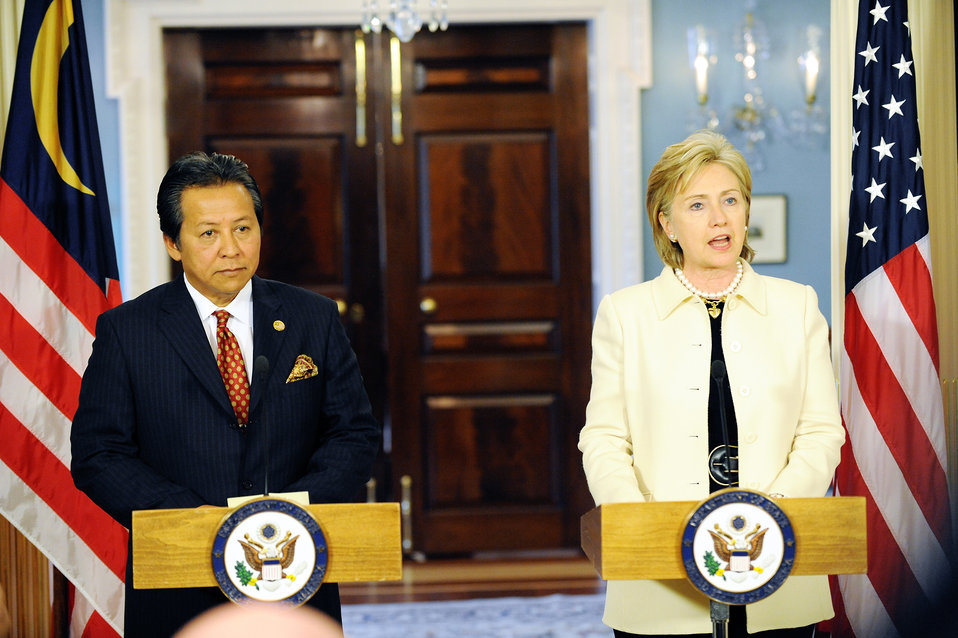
Secretary Clinton Meets With Malaysian Foreign Minister

U.S. Secretary of State Hillary Rodham Clinton hosts a bilateral meeting with Malaysian Foreign Minister Y.B. Datuk Anifah bin Haji Aman in the Treaty Room of the U.S. Department of State in Washington, DC May 14, 2009.